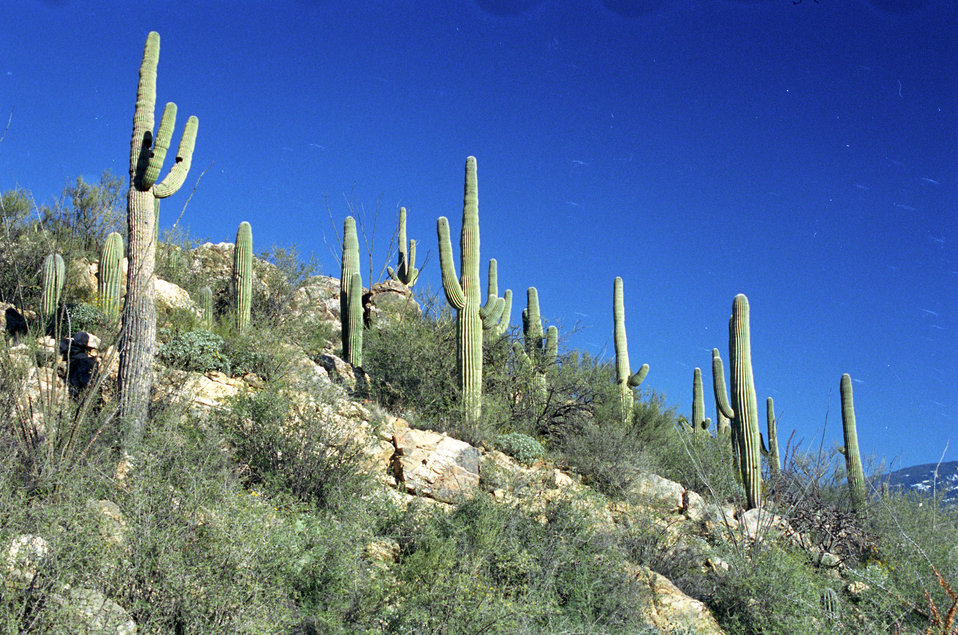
Saguaro cacti thrive on the desert part of the Tonto National Forest near Tucson, AZ on January 25, 2001. The Tonto National Forest near Tucson, AZ is the fifth largest forest in the U.S. and is one of the most-visited “urban” forests in the U.S. (approximately 5.8 million visitors annually). The forest is approximately 3 million acres of rugged and spectacularly beautiful country, ranging from Saguaro cactus-studded desert to pine-forested mountains beneath the Mogollon Rim.